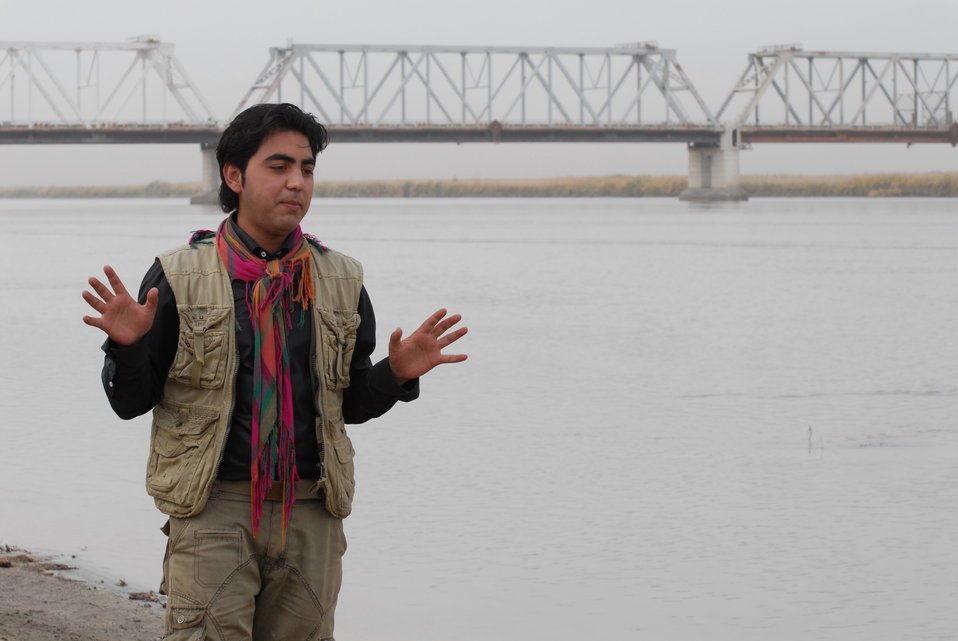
'On the Road' in Balkh Province